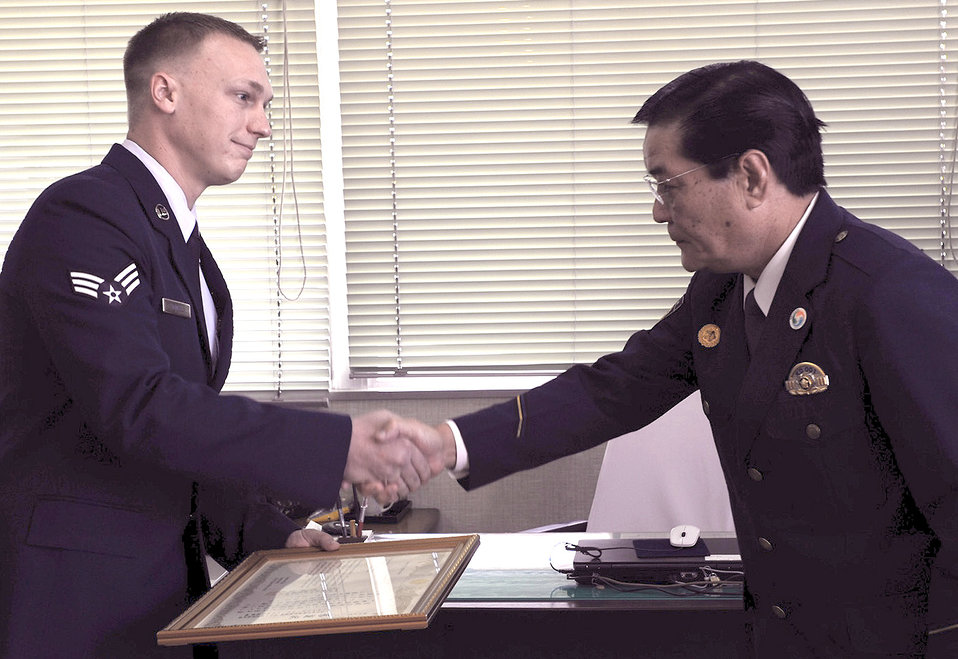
Senior Airman Richard Howell accepts a certificate of appreciation from the Kadena Town chief of police during a formal recognition ceremony at the police station Nov. 1, 2010, near Kadena Air Base, Japan. Airman Howell helped save the life of a local boy who went unconscious and nearly drowned while snorkeling with his father. Airman Howell is from the 961st Airborne Air Control Squadron.